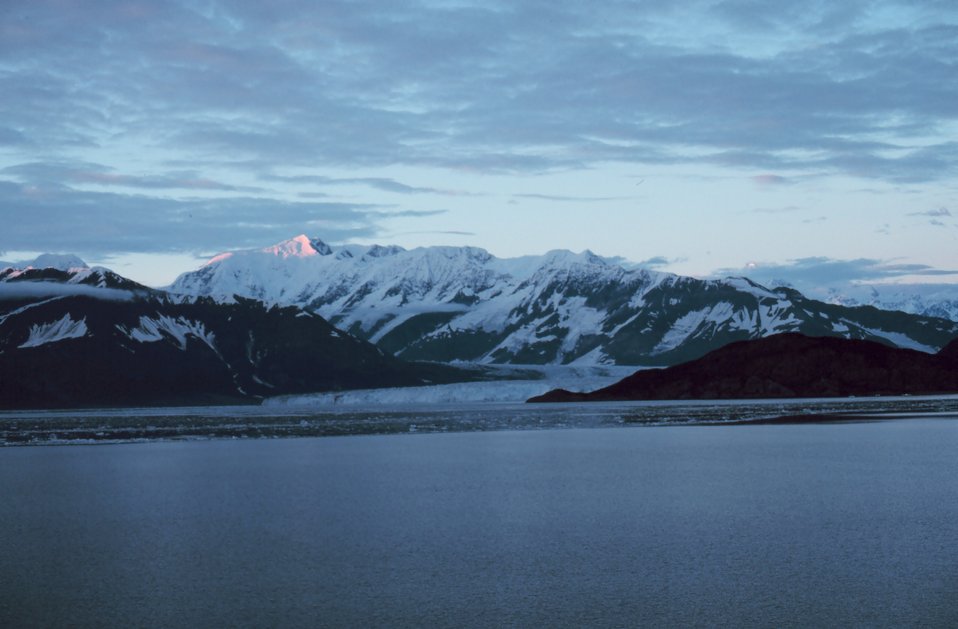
Icy Bay, looking to northwest